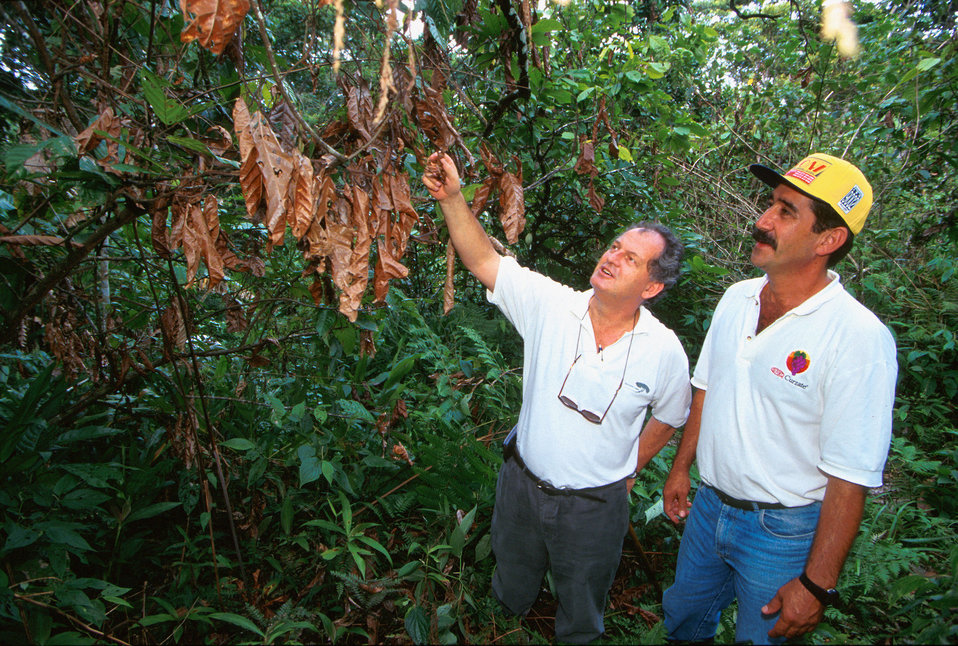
M&M Mars, Inc. Almirante Farm Director Martin Aitkin and a local farmer assess damage from a large, dry witches'-broom growth in a cacao tree at the Luz de Maria farm in Uruçuca, Brazil.